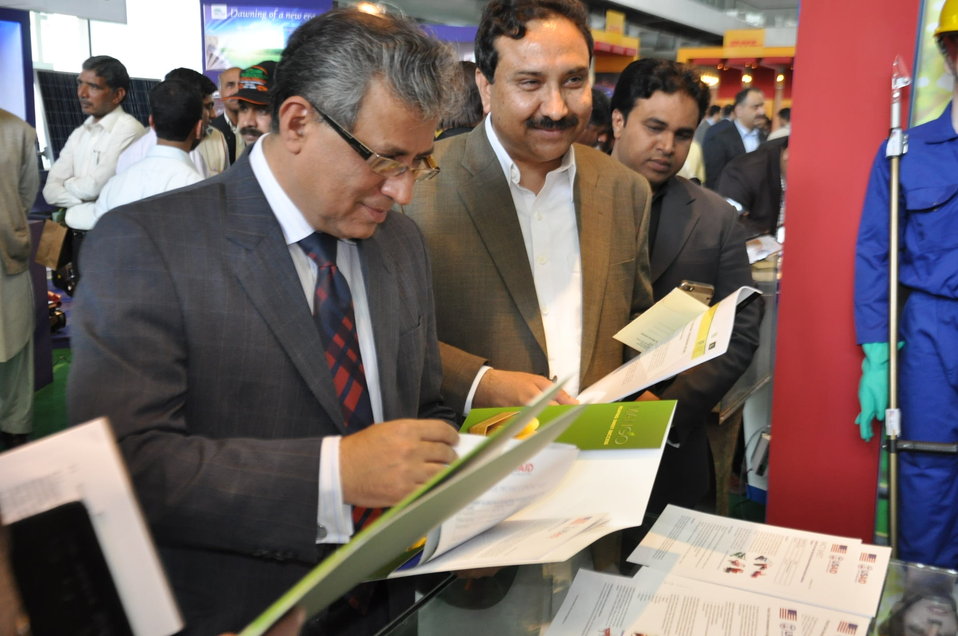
USAID Firms Project at the Dawn Agri Expo 2014

Dr. Ijaz Munir, Secretary, Agriculture Department , Govt of Punjab and Mr. Muhammad Rafiq Akhtar, Director Information Agriculture department visited USAID Firms Project Stall at the Dawn Agri Expo 2014